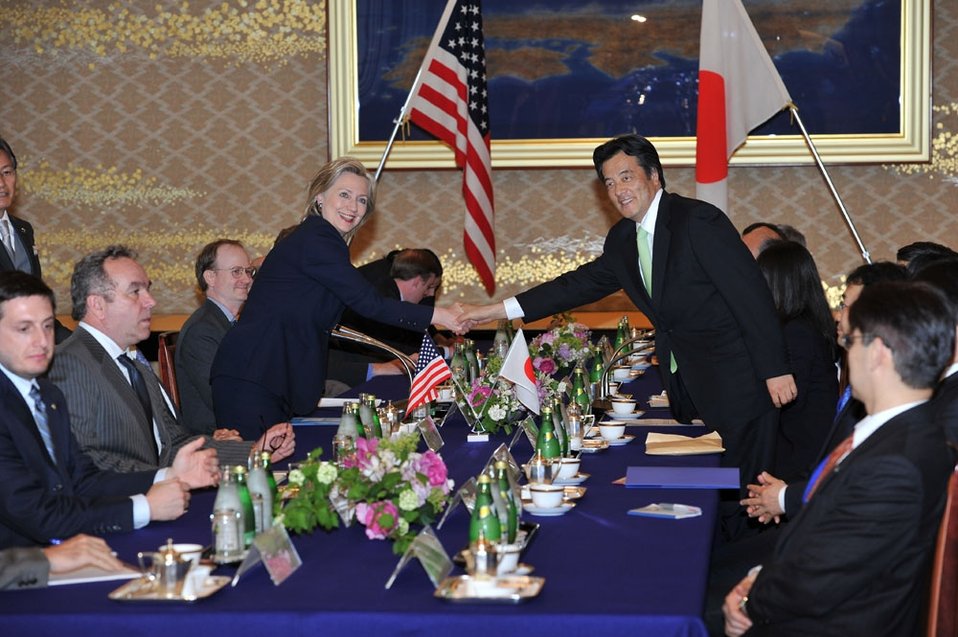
Secretary Clinton and Japanese Foreign Minister Okada Shake Hands Before Talks

U.S. Secretary of State Hillary Rodham Clinton and Japanese Foreign Minister Katsuya Okada shake hands before starting their consultative meeting at the Iikura House of the Foreign Ministry in Tokyo, Japan, May 21, 2010.